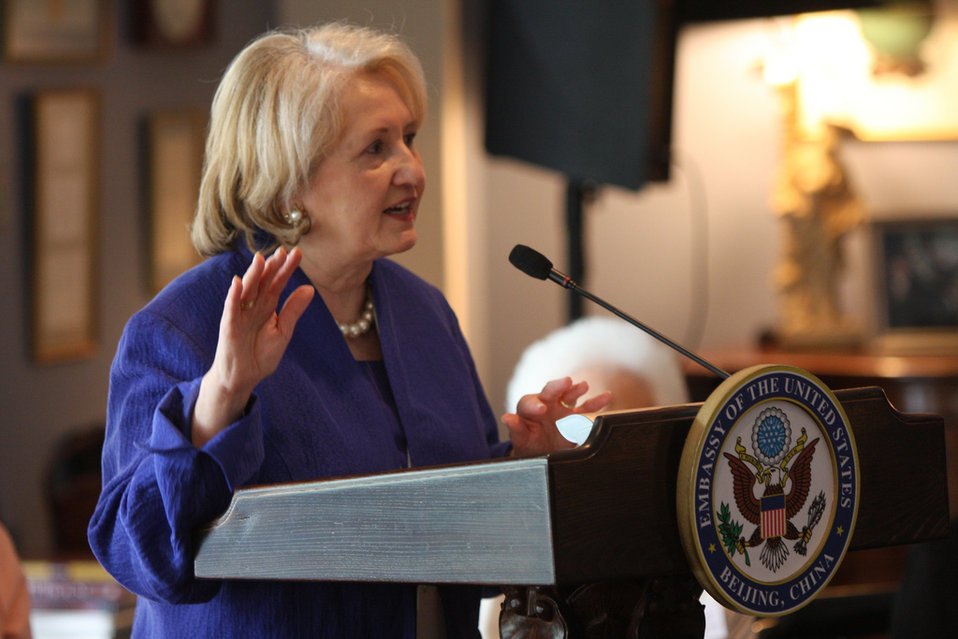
Ambassador Verveer Speaks at a Women's Event

Ambassador-at-Large for Global Women's Issues Melanne Verveer speaks at a meeting with members of Chinese women’s groups. The meeting was hosted by Mary Kay Huntsman, wife of the U.S. Ambassador to China Jon Huntsman, in Beijing, China, on May 24, 2010. Ambassador Melanne Verveer accompanied U.S. Secretary of State Hillary Rodham Clinton on her foreign travel to Asia from May 18 - May 26.